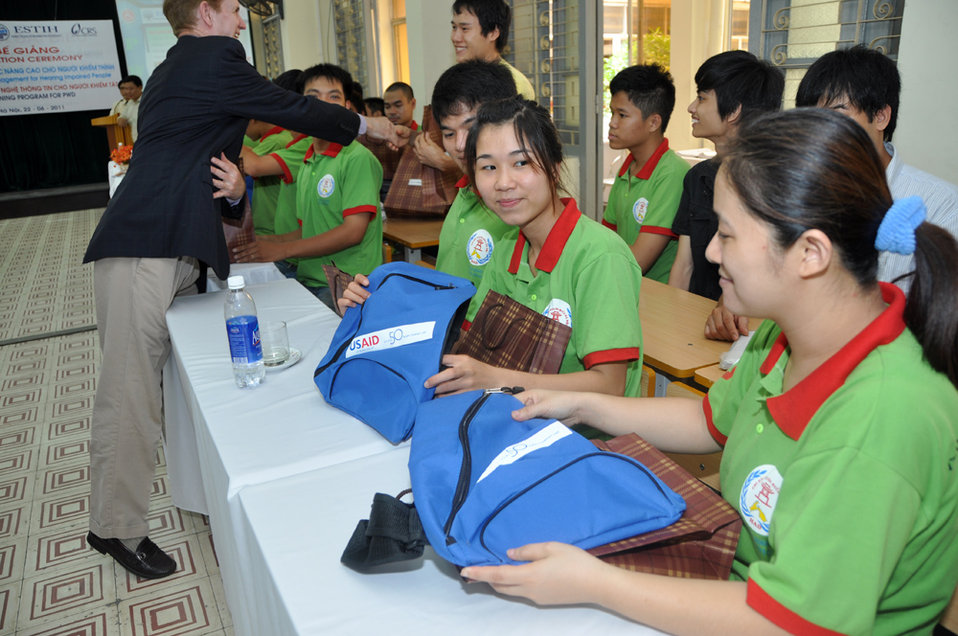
Hearing Impaired Graduates receive USAID 50th shoulder bags on June 22, 2011.